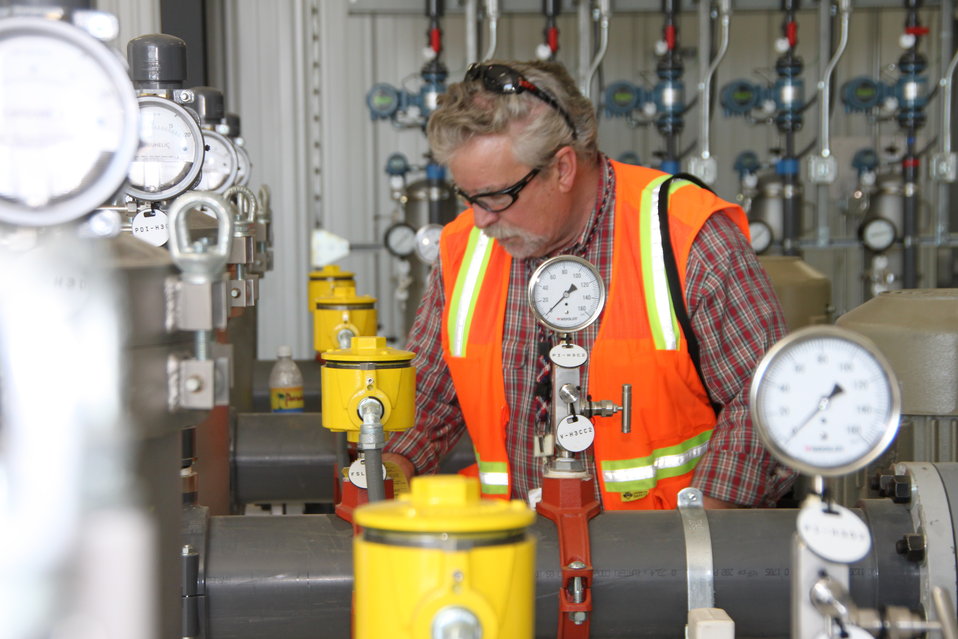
Hanford 100-HX facility

Joe Guyette, Quality Assurance, inspects equipment ready for operations to begin in the 100-HX groundwater treatment facility.